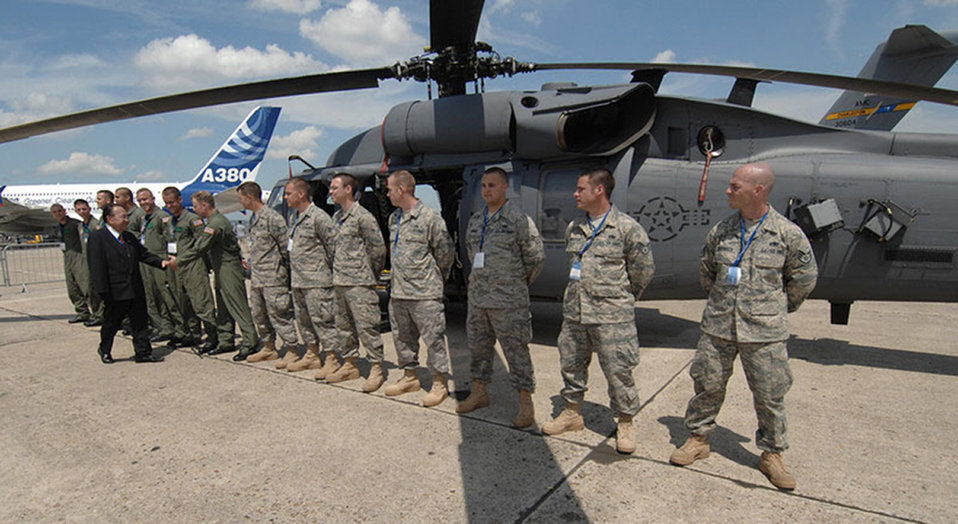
SECAF visits Paris

Senator Daniel K. Inouye of Hawaii shakes hands and lauds the pilots of the 41st Rescue Squadron and maintainers of the 723rd Aircraft Maintenance Squadron at Le Bourget Airport, France. Both units from Moody Air Force Base, Ga. proudly display their HH-60G Pave Hawk rescue helicopter. The Pave Hawk rescue helicopter is one of the several U.S. military aircraft put on show June 15 to 20 at the Paris Air Show.